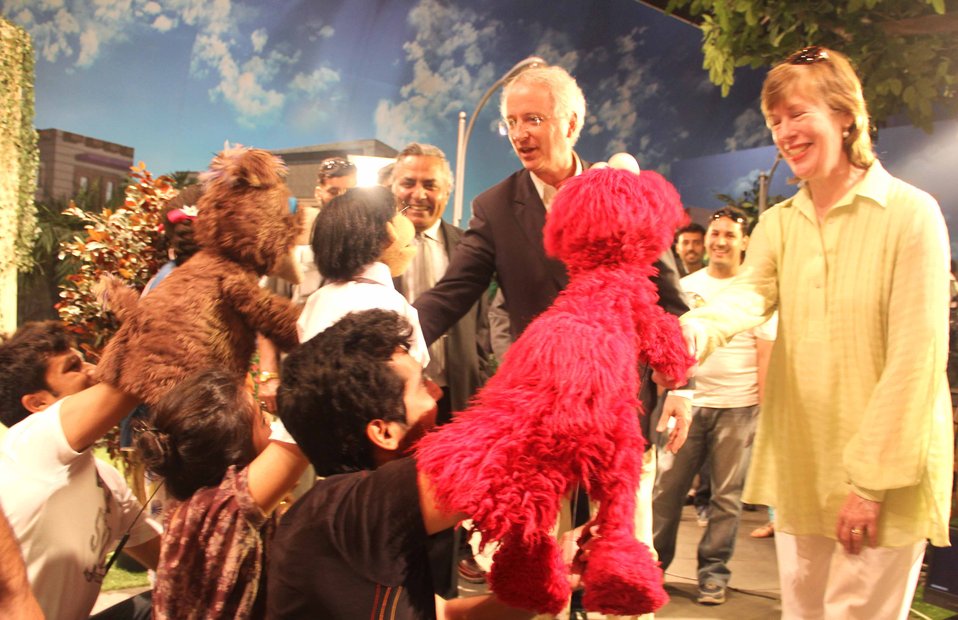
U.S. Ambassador’s Visit to Sim Sim Hamara Highlights U.S. Commitment to Improved Children’s Education in Pakistan at Lahore on 28 April, 2012

Mr. Cameron Munter and his wife Dr. Marliyn Wyatt shaking hands with artist of the Sim Sim Hamara